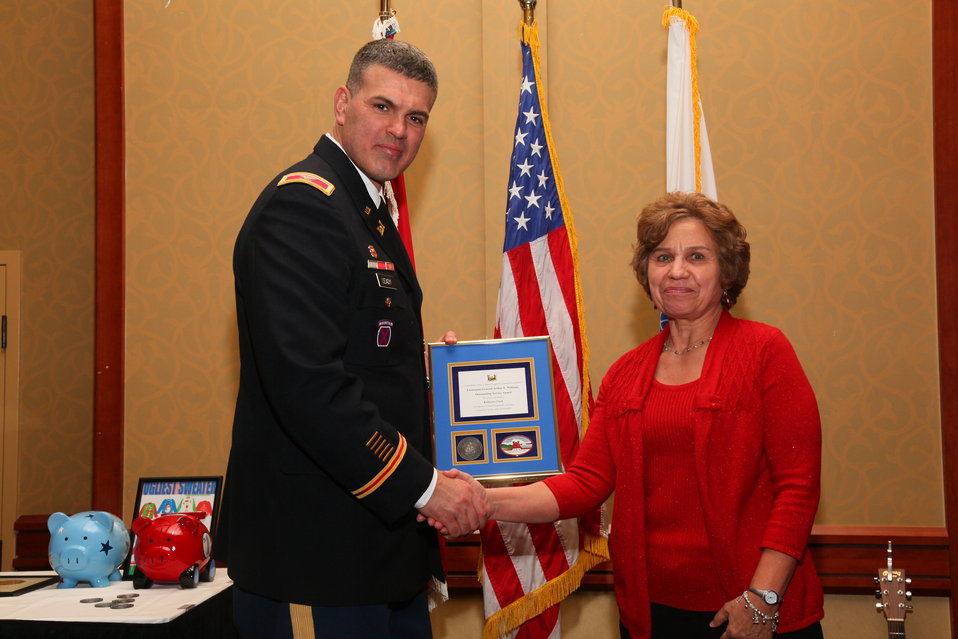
Sacramento District Holiday Party 2011